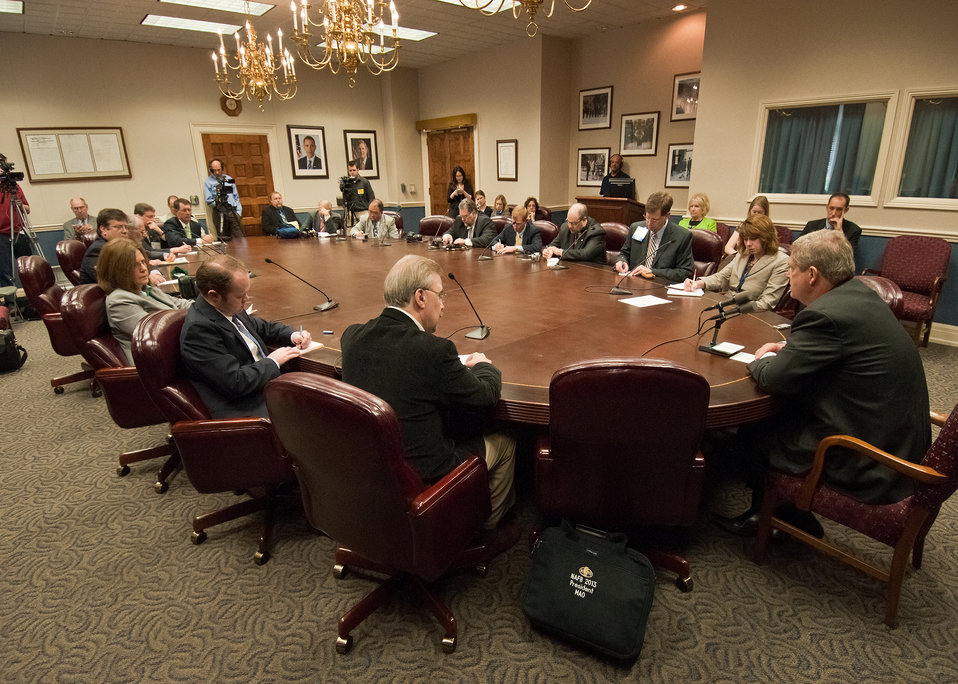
Agriculture Secretary Tom Vilsack discusses agriculture issues with members of the National Association of Farm Broadcasters at the United States Department of Agriculture during the annual National Association of Farm Broadcasters visit to Washington, DC, Tuesday, May 5, 2011. The NAFB is an important communication link of agriculture information to famers, ranchers and rural America.